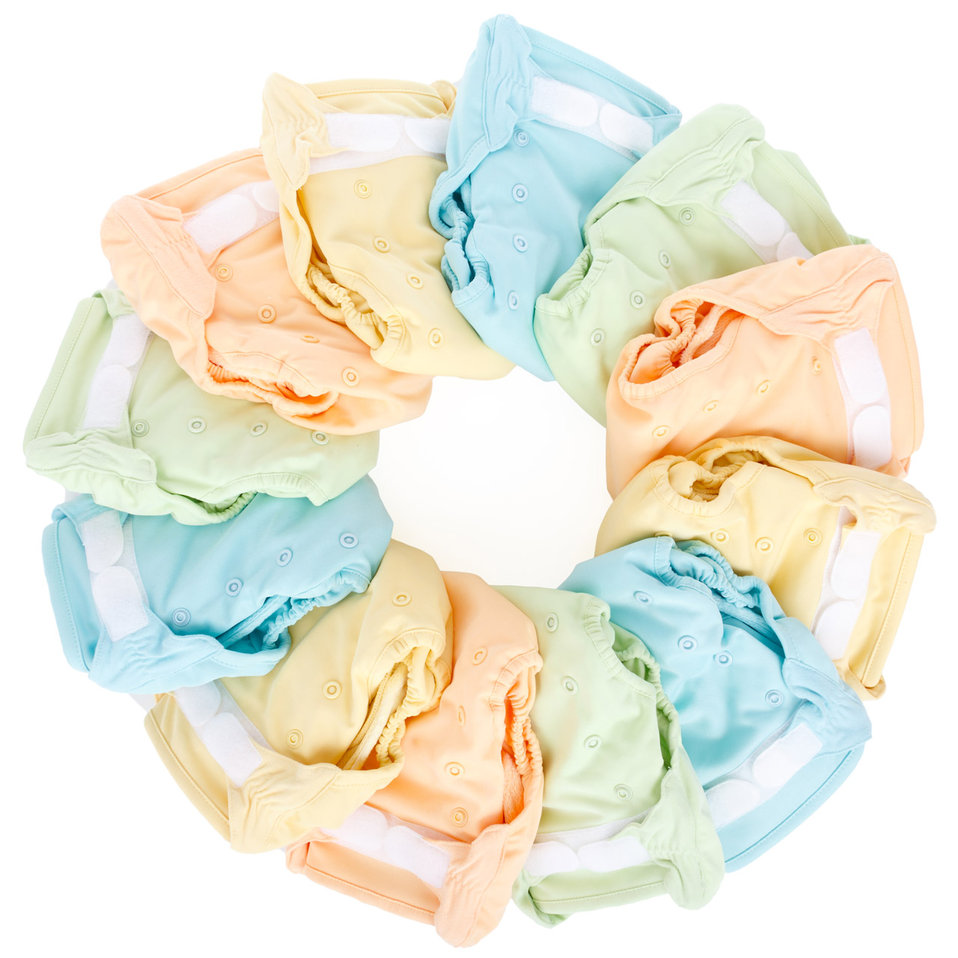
Ecological diapers

Colorful ecological nappies in circle shape.